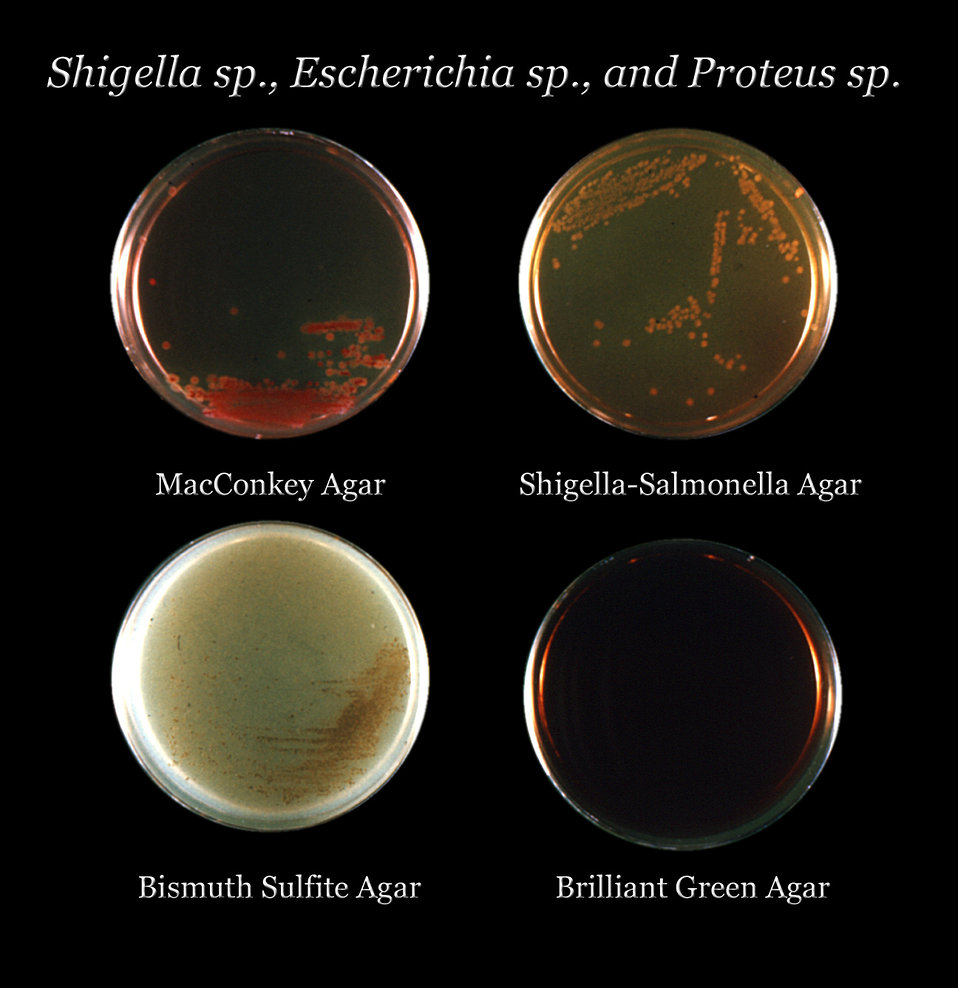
After 24 hours of growth, this image depicts four different agar media culture plates that had been inoculated with Shigella sp., Escherichia sp., and Proteus sp. bacteria, (clockwise: MacConkey, Shigella-Salmonella, Bismuth Sulfite, and Brilliant Green agars).